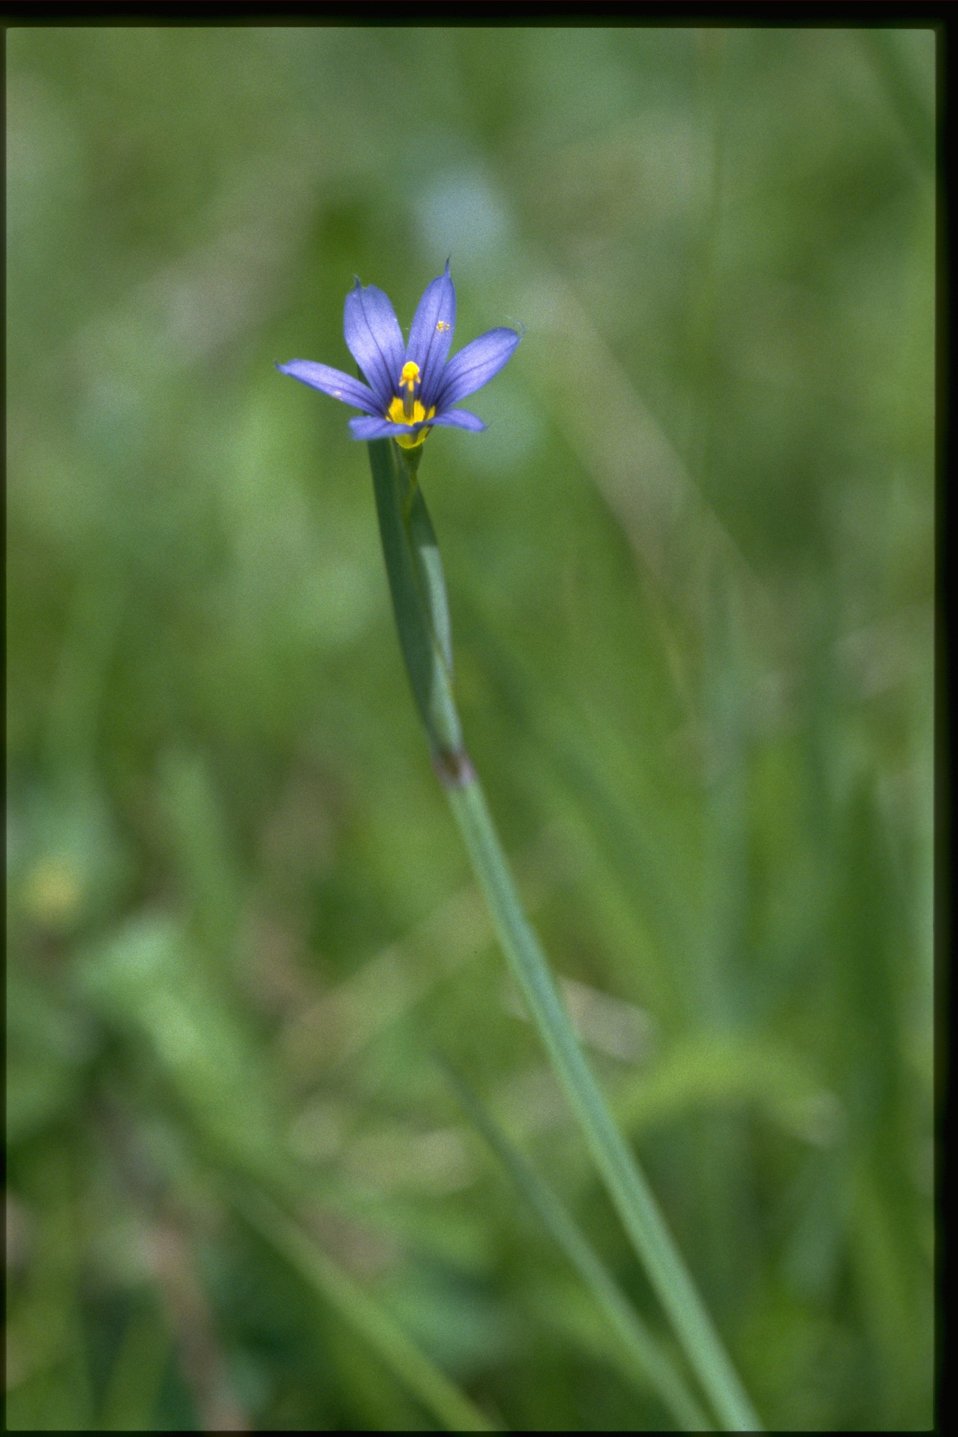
Medium shot of Sisyrinchium idahoense.